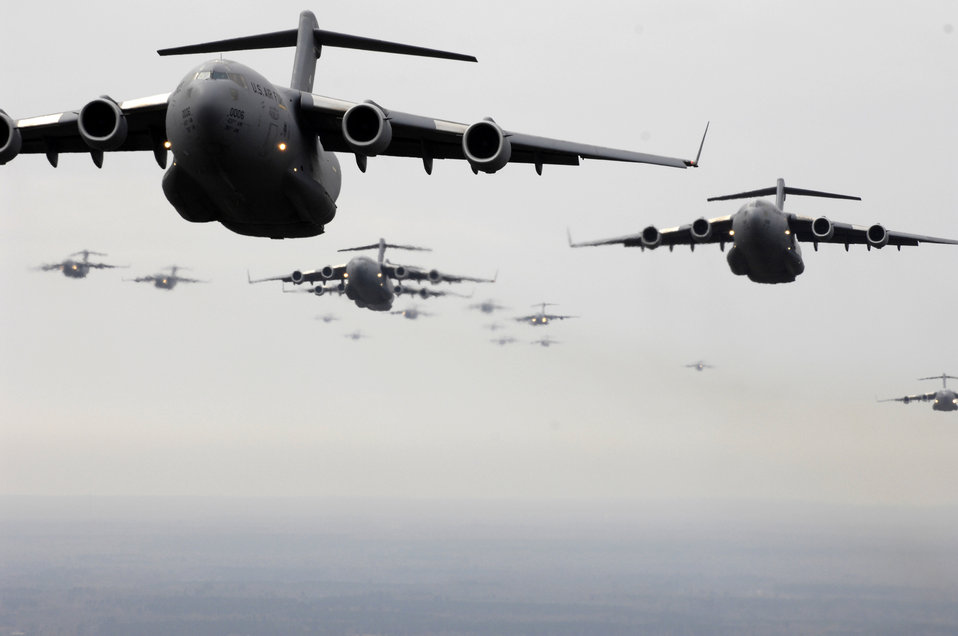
20 Charleston C-17s fill the sky

Several C-17 Globemaster IIIs fly as part of a 20-ship formation Dec. 21 over South Carolina. The C-17s, assigned to the 437th and 315th Airlift Wings at Charleston AFB, were part of the largest formation in history from a single base and demonstrated the strategic airdrop capability of the Air Force.